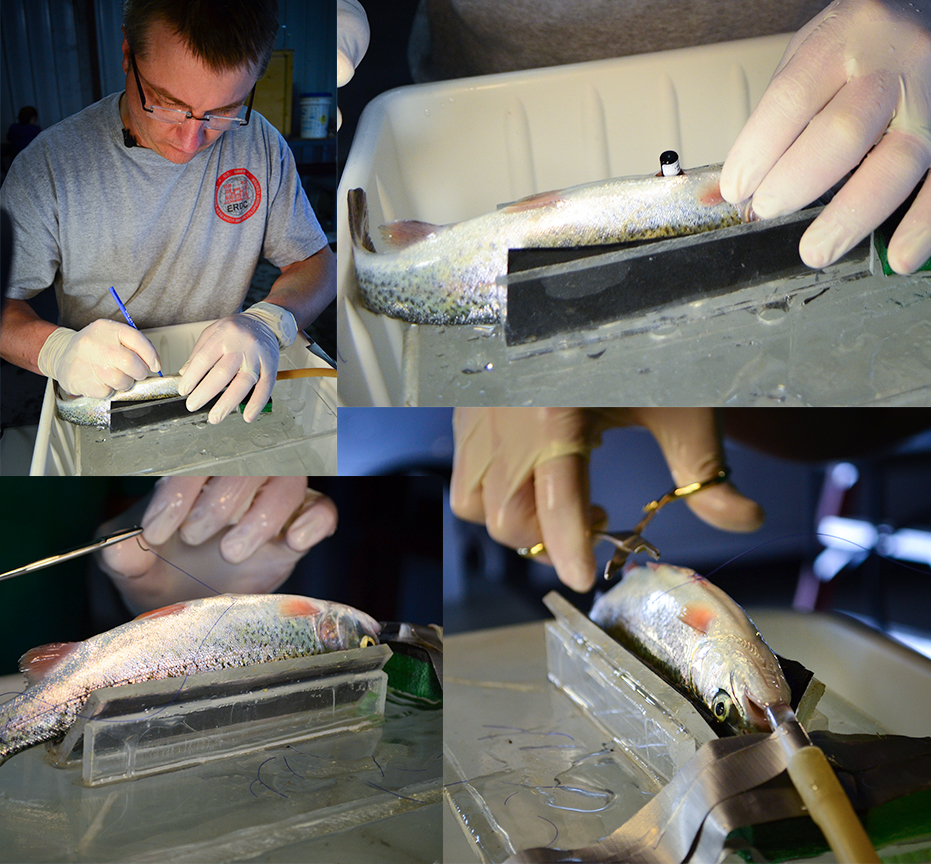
Dave Smith fish-suturing collage

Dave Smith, research ecologist from the U.S. Army Corps of Engineers' Engineer Research and Development Center in Vicksburg, Miss., surgically implants an acoustic tag into a 1-year-old steelhead trout March 25, 2013, at the Coleman National Fish Hatchery in Anderson, Calif. Smith is using the fish-tag data obtained for use in a computer model that helps evaluate habitat restoration work under the Sacramento River Bank Protection Project, a joint flood risk reduction effort between the district and the state's California Central Valley Flood Protection Board to repair riverbank erosion along the Sacramento River and its tributaries.